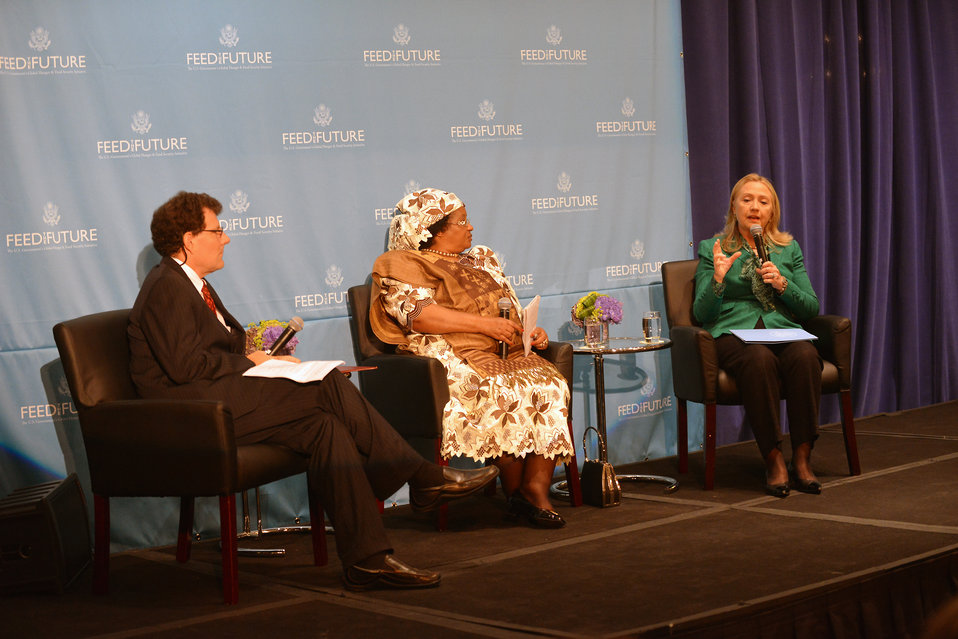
Secretary Clinton Delivers Remarks at an Event for Feed the Future: Partnering with Civil Society

U.S. Secretary of State Hillary Rodham Clinton delivers remarks at an event for Feed the Future: Partnering with Civil Society in New York, New York on September 27, 2012.